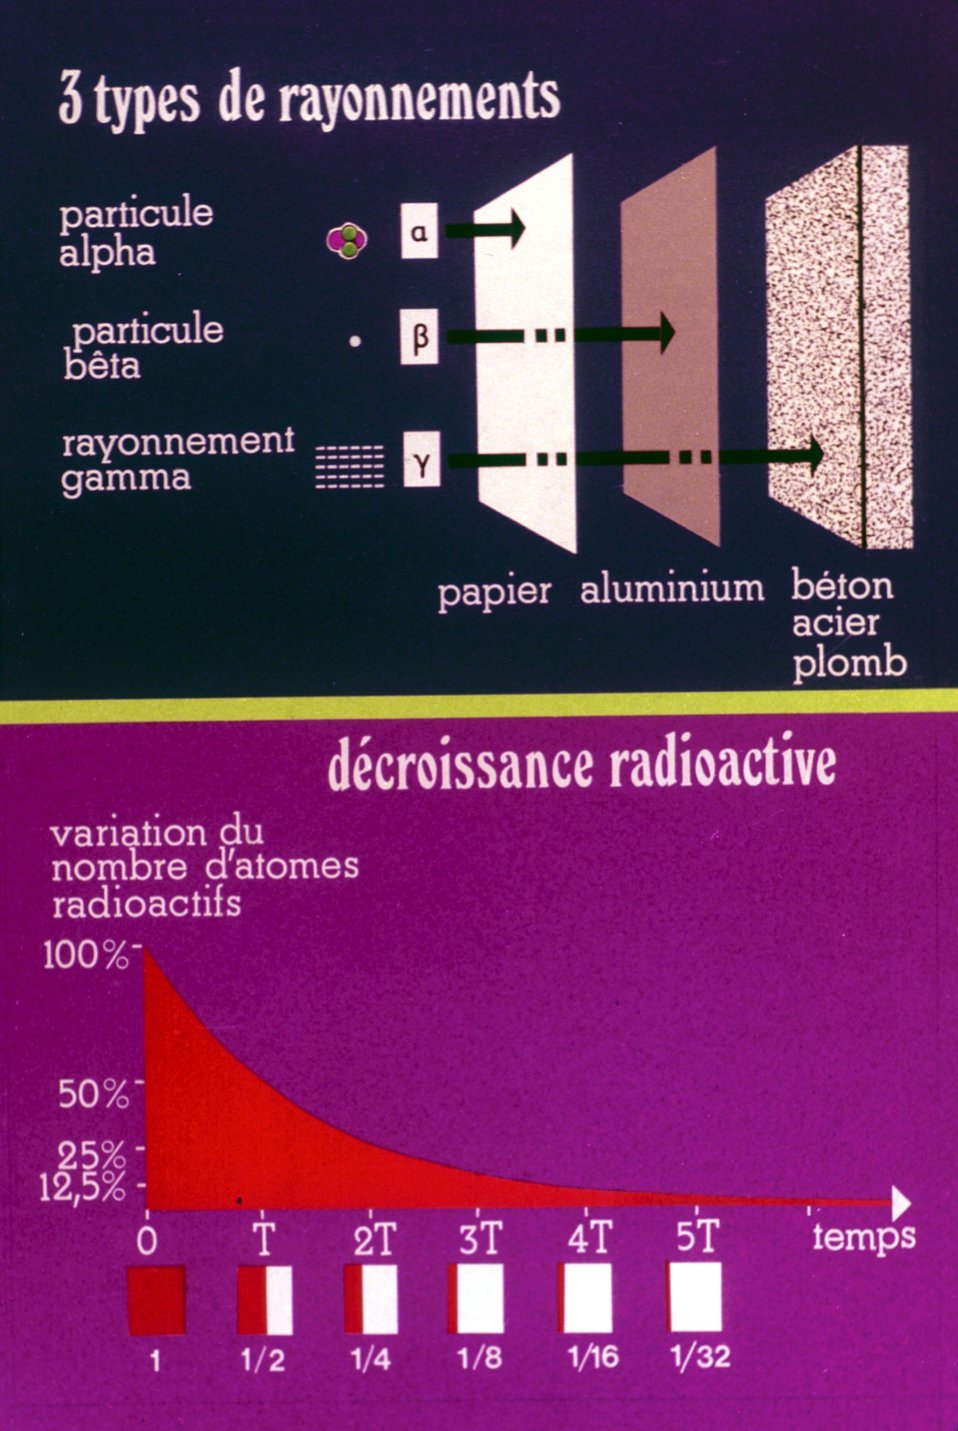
RadioactivitÐ.